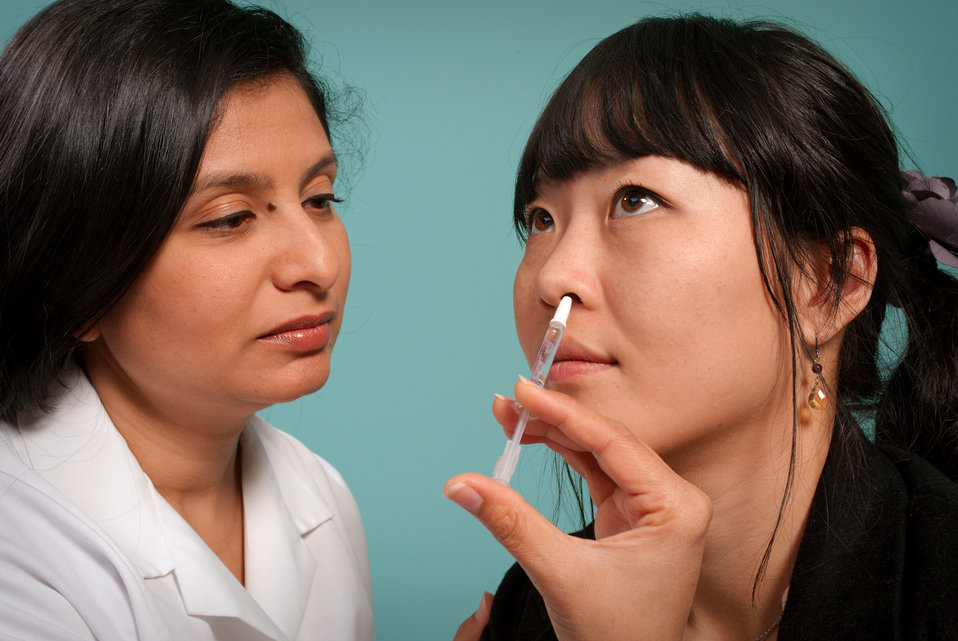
Intranasal H1N1 vaccine

This 2009 image depicts a healthcare practitioner as she was administering the H1N1 live attenuated intranasal vaccine (LAIV) to an Asian woman. Using a small syringe, she was delivering the vaccine mist into the woman's left nostril.